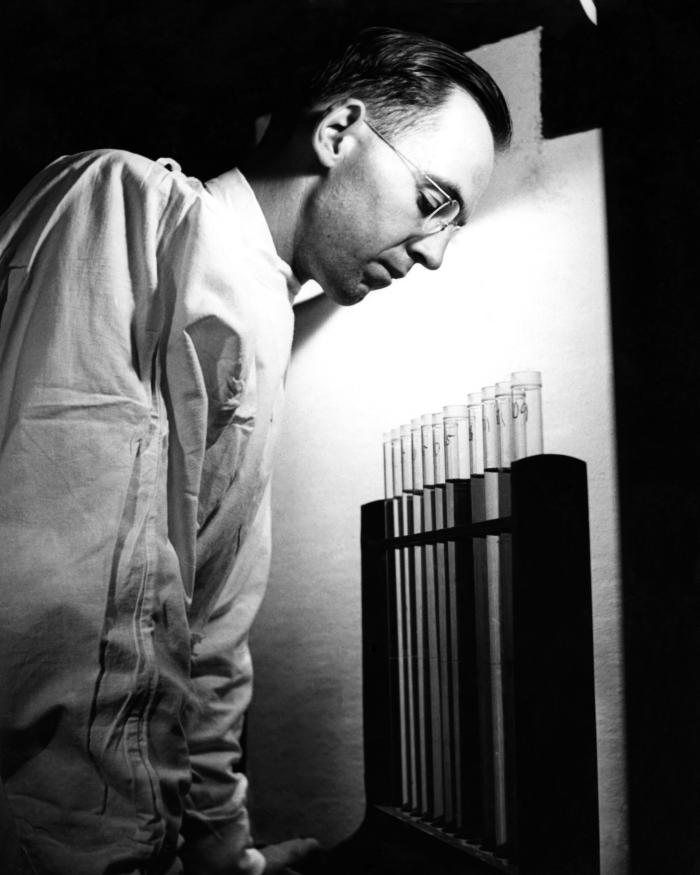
This November, 1943 photograph was provided by the Center for Disease Control's (CDC), National Institute for Occupational Safety and Health (NIOSH). The image depicted an industrial chemist in the process of analyzing test tubes filled with solutions of TNT (trinitrotoluene), and Tetryl, which is an organic explosive compound that is potentially an irritant known to cause industrial dermatitis. The tests being performed induced color changes in the solutions, which were then compared, and the results recorded. Note that the scientist was not wearing a protective filtered breathing mask, goggles, or gloves while carrying out these experiments.